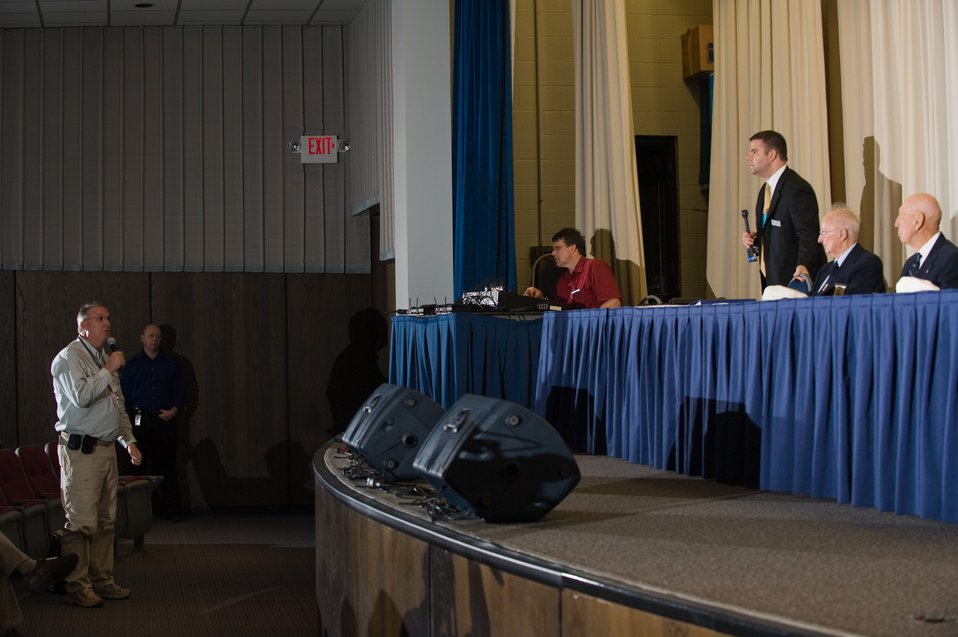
Doolittle Tokyo Raiders' panel

Robert Badua (standing) and (Left-right) C.V. Clines, Doolittle Raiders historian and author moderates a question and answer session between news media and Doolittle Raiders Lt. Col. Richard E. Cole, Lt. Col. Robert L. Hite, Major Thomas Griffin, and Master Sgt. David J. Thatcher. The session was held at the National Museum of the U.S. Air Force at Wright-Patterson Air Force Base, Ohio on April 16, 2010.